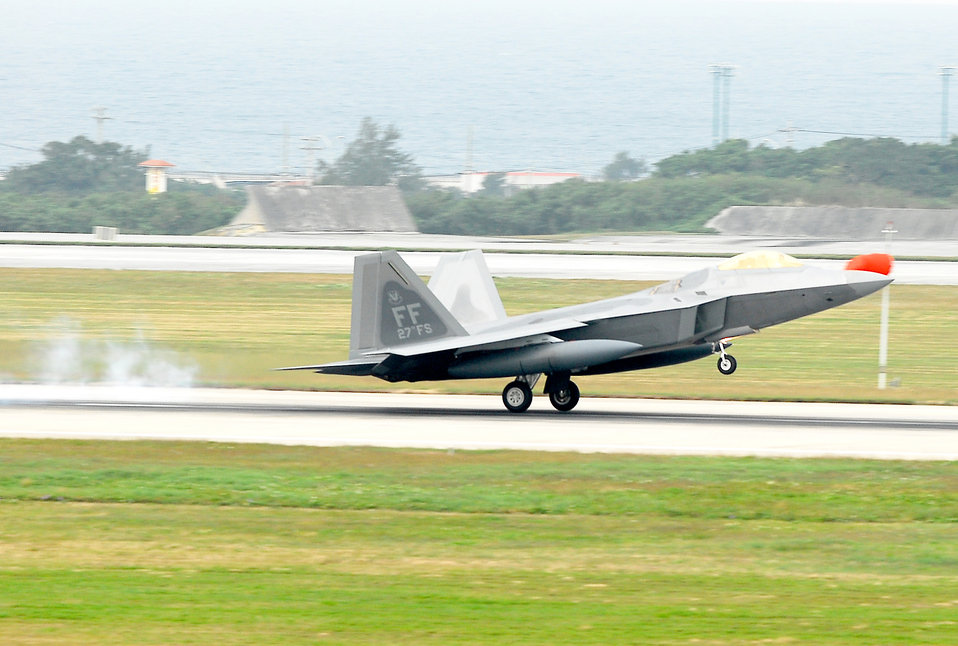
Raptors arrive at Kadena

An F-22 Raptor lands at Kadena Air Base, Japan, Feb. 18, marking the aircraft's first overseas deployment. The jet is one of 12 along with more than 250 Airmen deployed from Langley Air Force Base, Va., to Kadena as part of an air expeditionary force rotation.